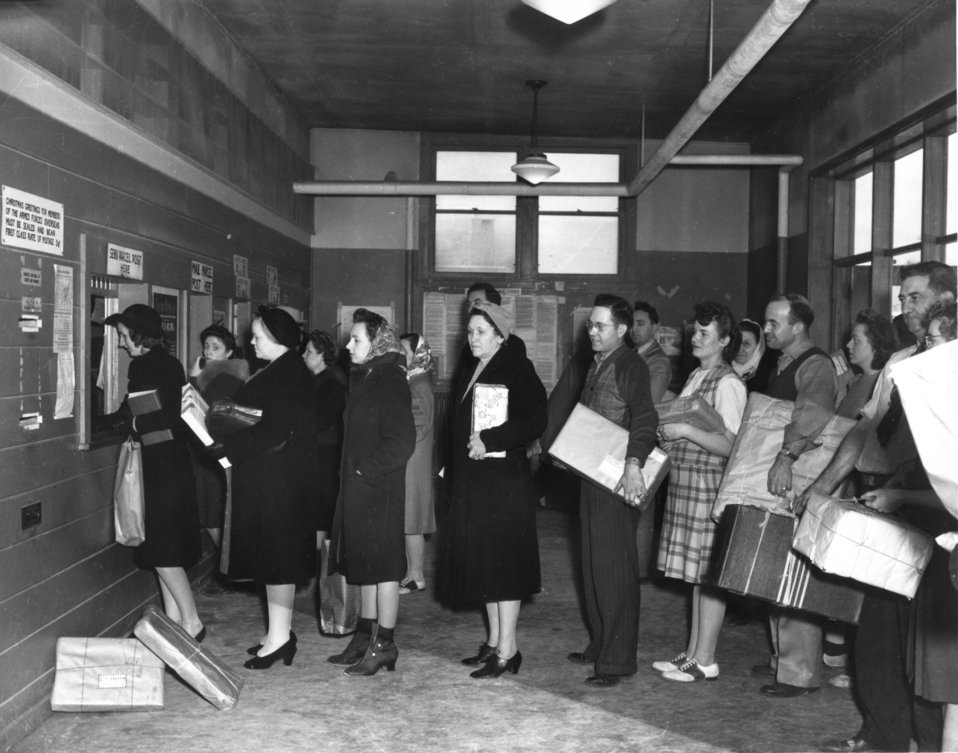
Daily Life at Oak Ridge